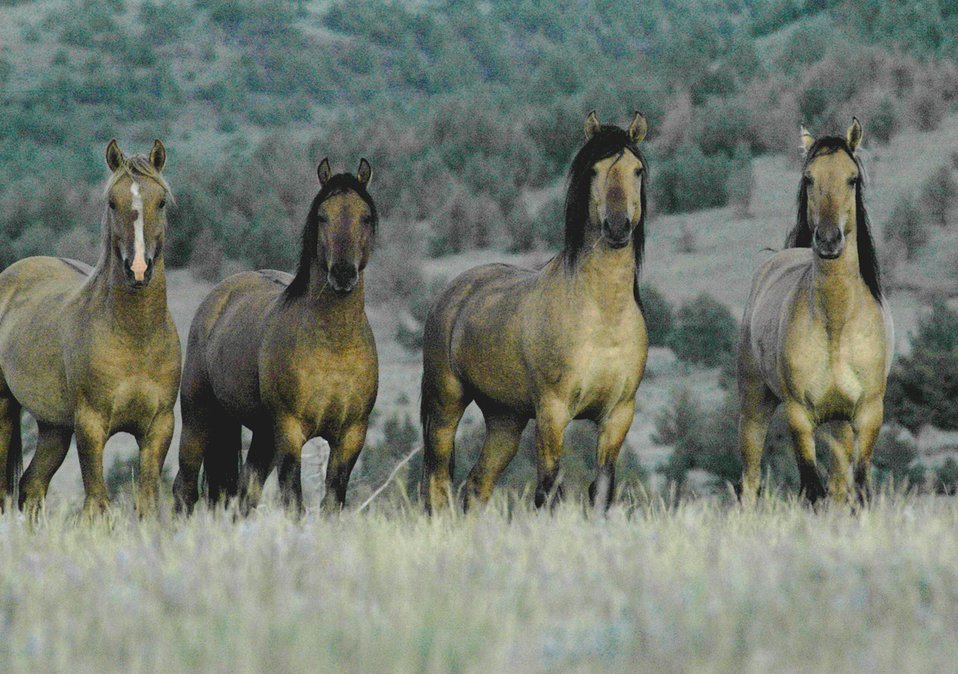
Kiger horses roam the plateaus of the Kiger Wildhorse Herd Management Area near Steens Mountain in Southeastern Oregon.